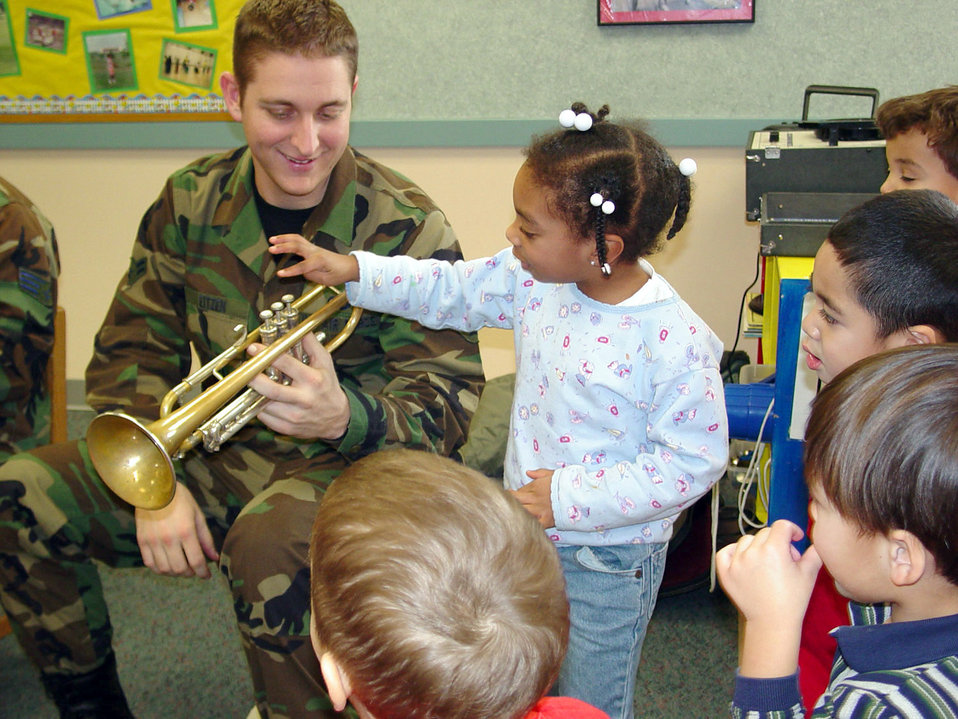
Tooting his horn

MINOT AIR FORCE BASE, N.D. -- Airman 1st Class Carl Eitzen shows Aniya Ingram how a trumpet works during a performance at the child development center here Dec. 19. Eitzen was part of a brass quartet from Air Force Heartland Band of America at Offutt Air Force Base, Neb. The musicians visited here Dec. 18 and 19 to perform holiday music for airmen and their families.